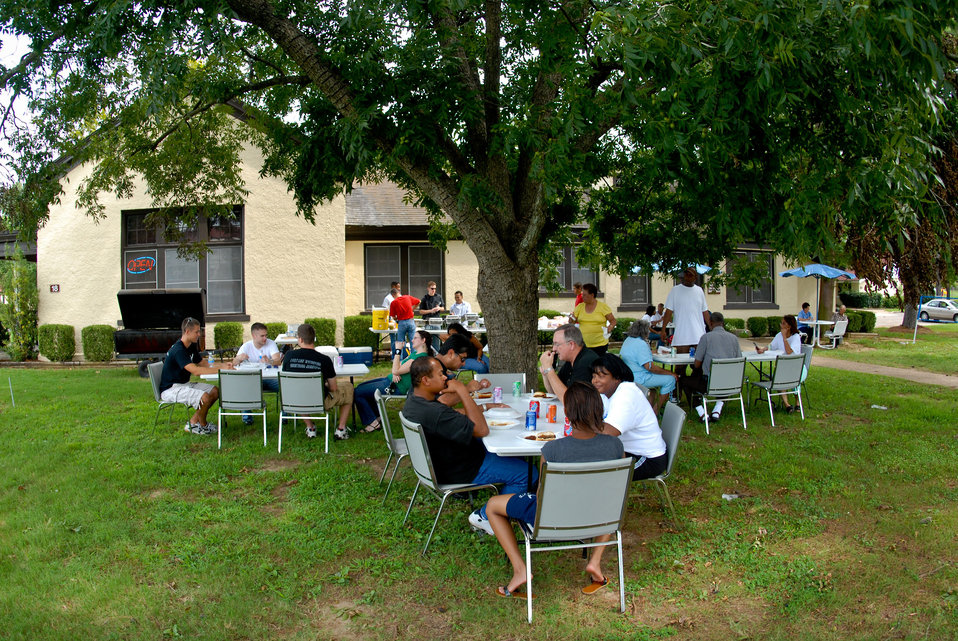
Maxwell officials provide shelter for Gustav evacuees

Hurricane Gustav evacuees staying on Maxwell Air Force Base, Ala., enjoy lunch served by staff members from the 42nd Air Base Wing base chapel. The chapel staff served food to about 150 of the more than 650 military and family members and government employees who evacuated to Maxwell from the Gulf Coast.